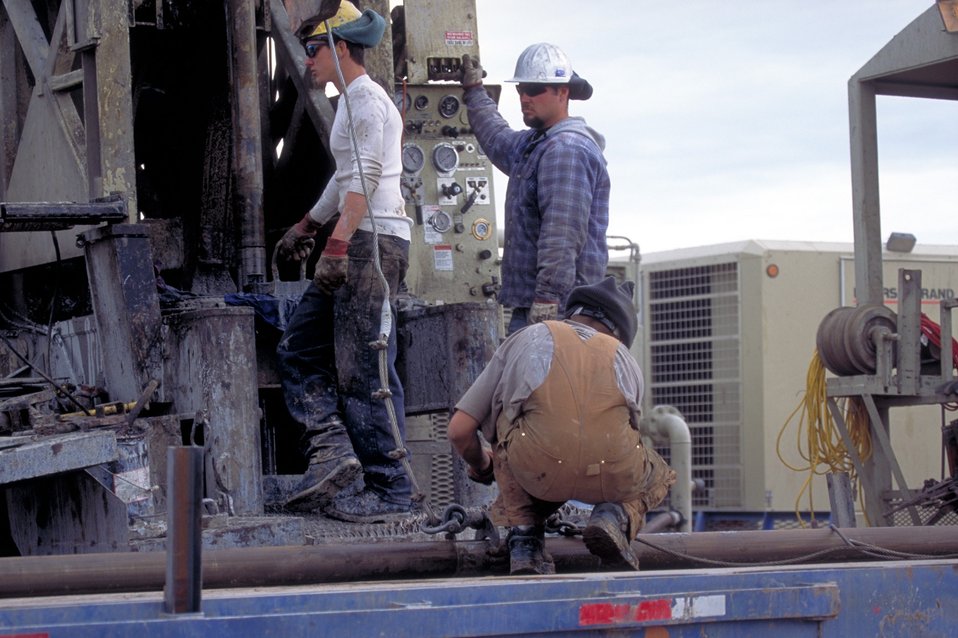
Drilling for coal bed methane near Price, Utah.